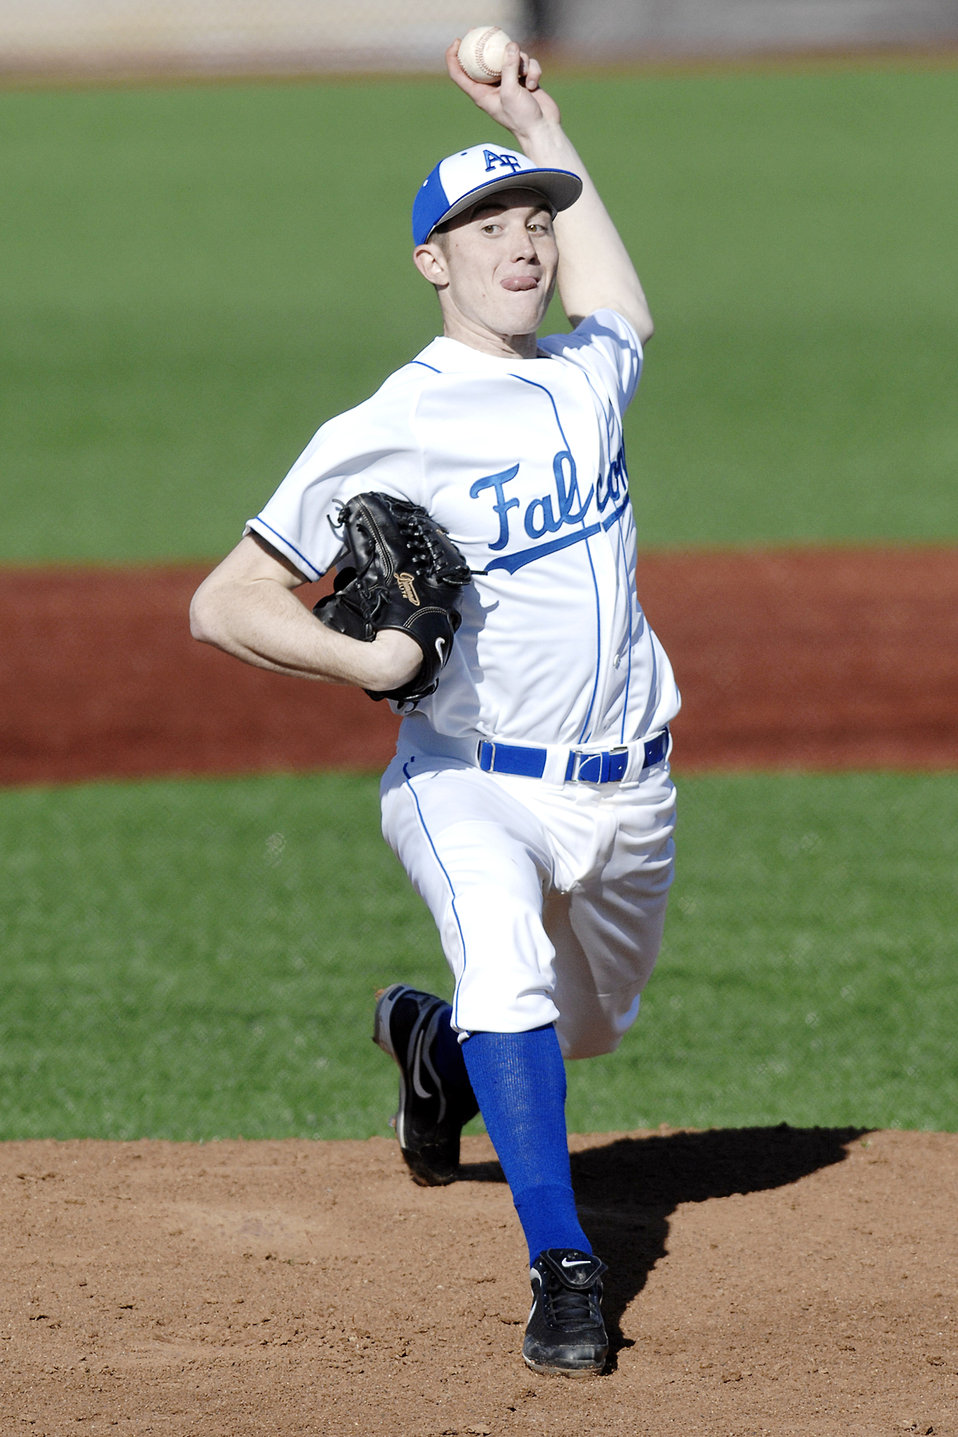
Falcons win baseball home opener

Falcon sophomore left-hander Andrew Loyd faces a batter during the Falcons 15-5 victory over Colorado Christian in its home-opener at the U.S. Air Force Academy's Falcon Field March 2, 2010. The win improved the Falcons to 2-6 and dropped the Cougars to 6-9.